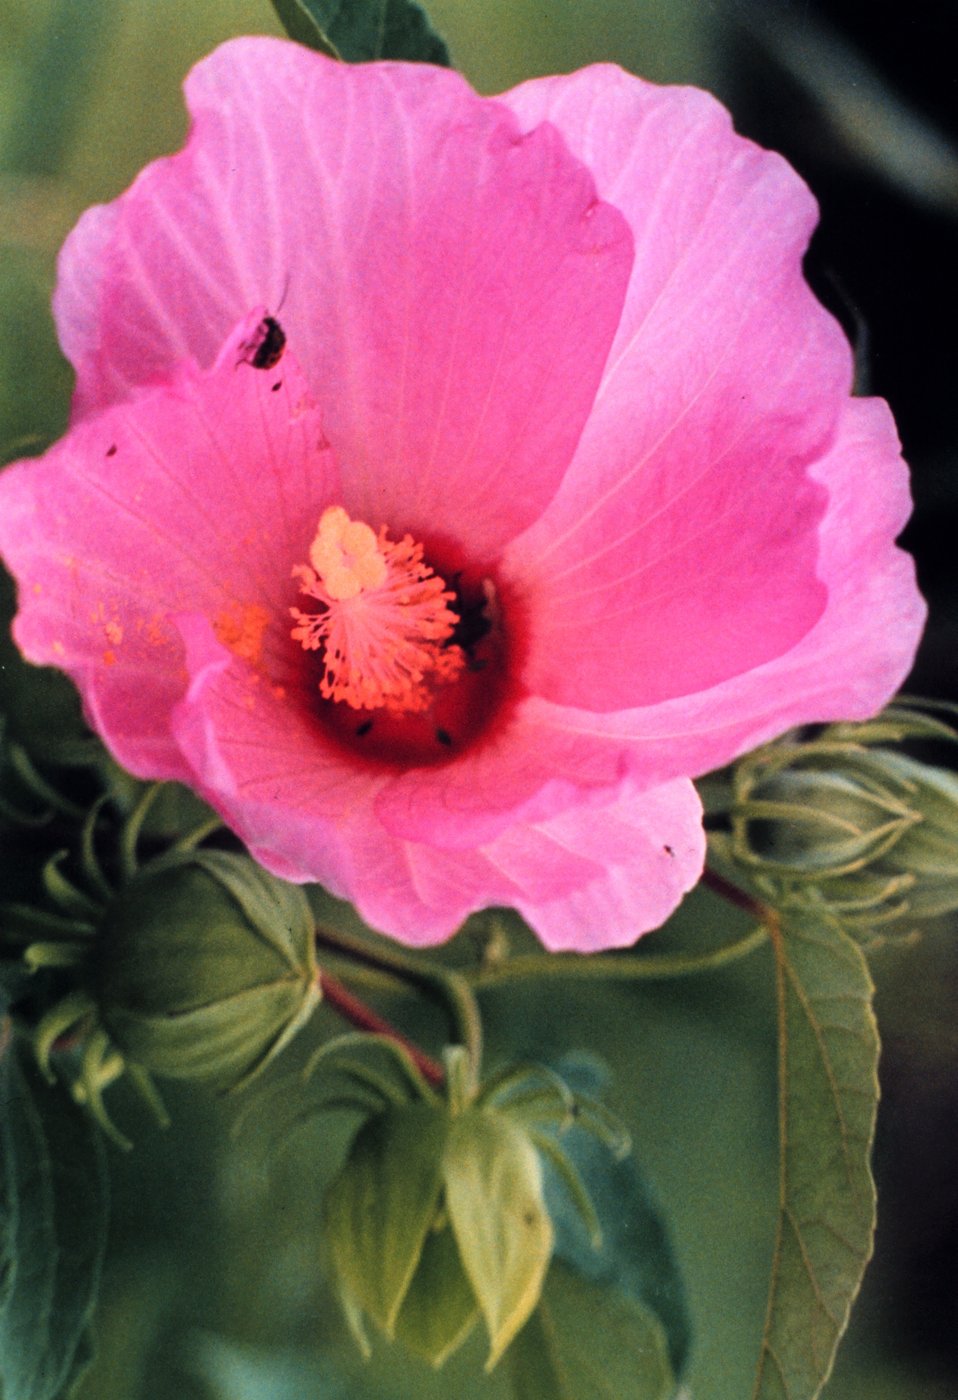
A pink marsh hibiscus flower.